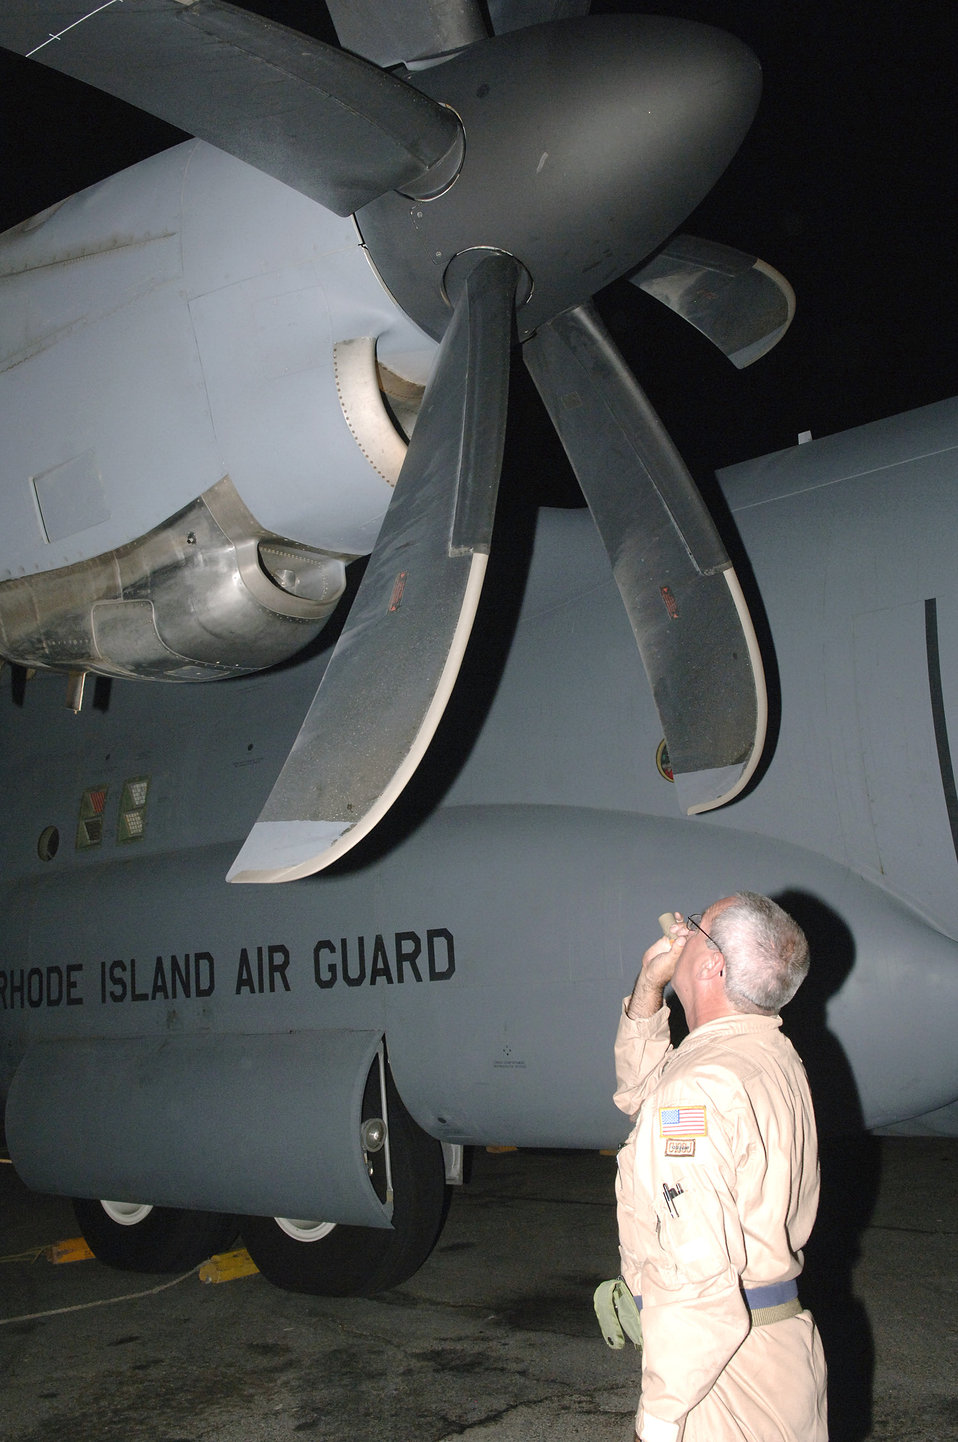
Airmen continue the 746th Expeditionary Airlift Squadron mission

Technical Sgt. Randall Edwards, 746th Expeditionary Airlift Squadron, performs a preflight inspection on one of the Rhode Island Air National Guard's C-130J Hercules.